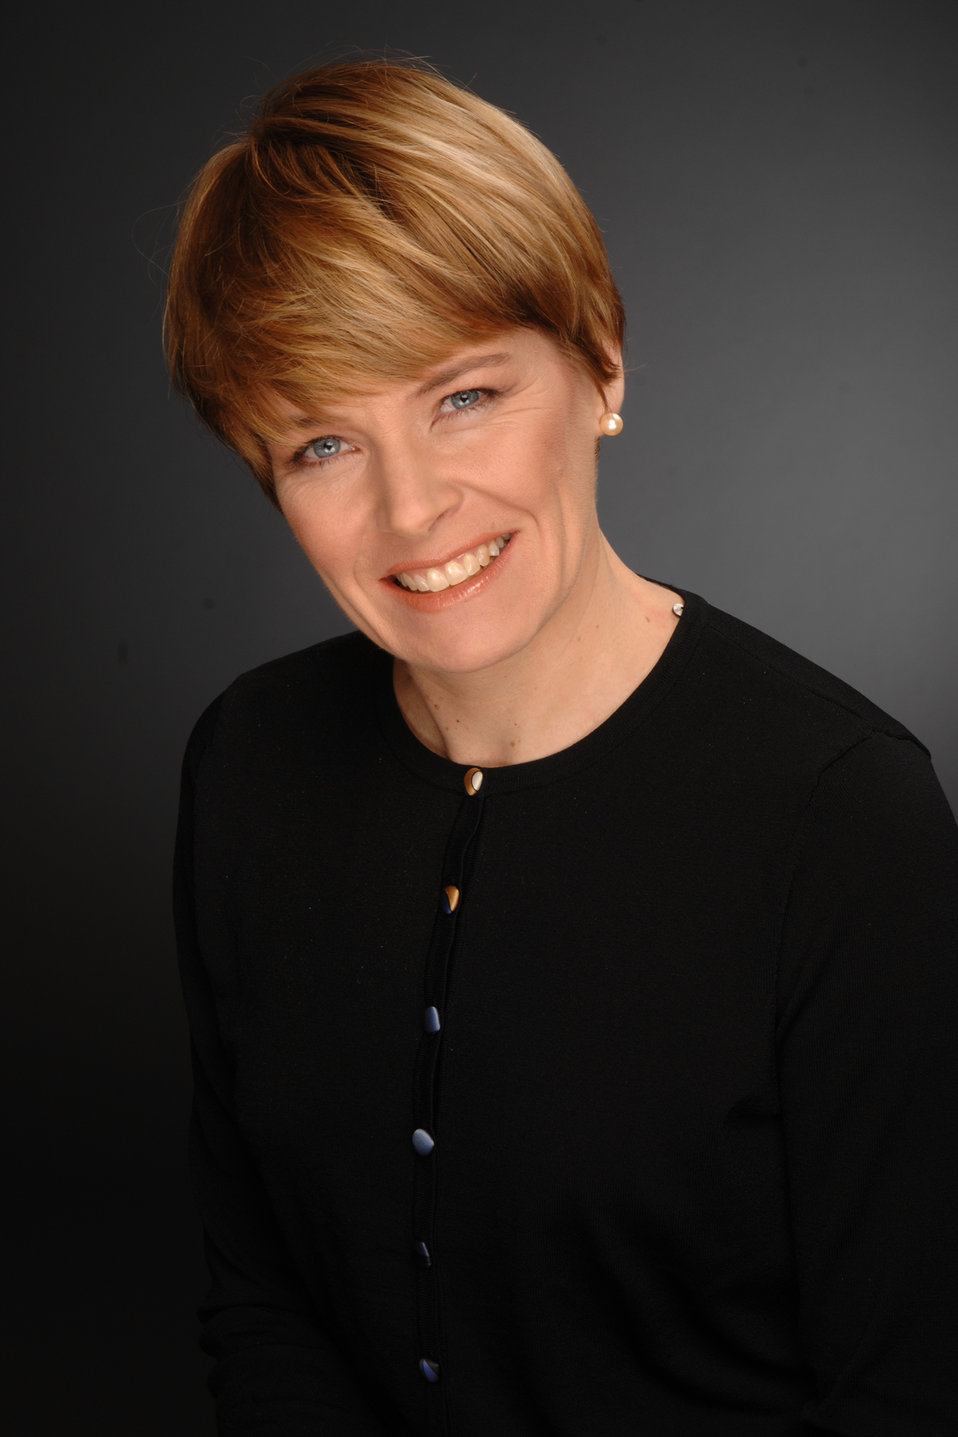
ARPA-E Deputy Director for Commercialization Cheryl Martin